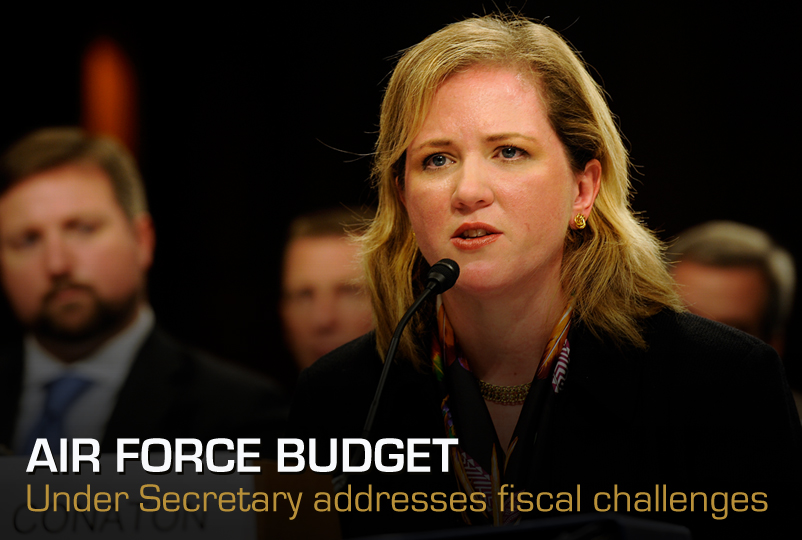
Undersecretary Conaton